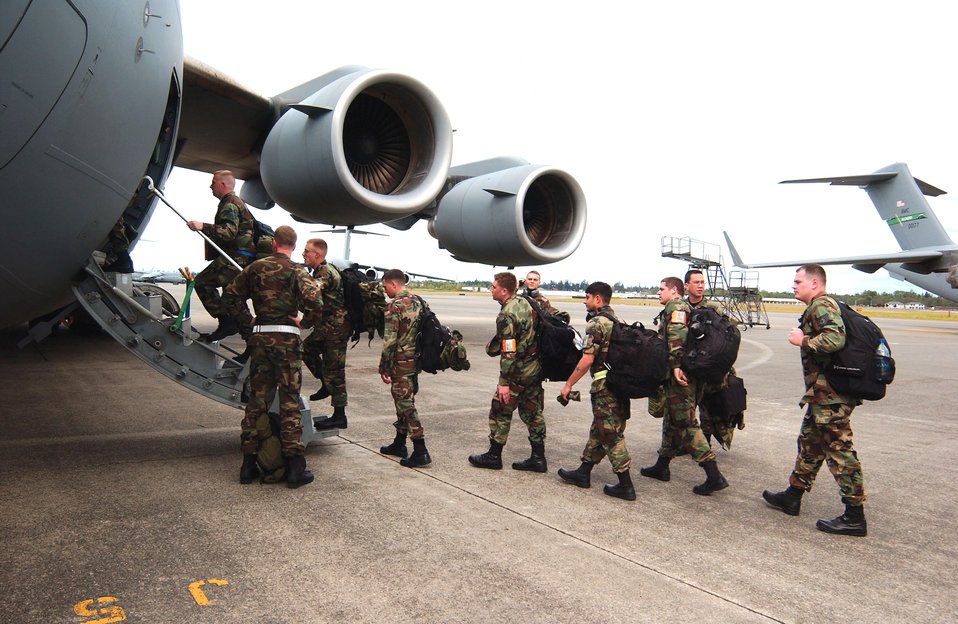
Thunderbolt in Michigan

Airmen from McChord Air Force Base, Wash., board a C-17 Globemaster III headed to Exercise Thunderbolt at Alpena, Mich., on Saturday, May 6, 2006. More than 650 Airmen from the 62nd and 446th Airlift Wings at McChord joined 425 Airmen from Grand Forks Air Base, N.D., for the mobility exercise.